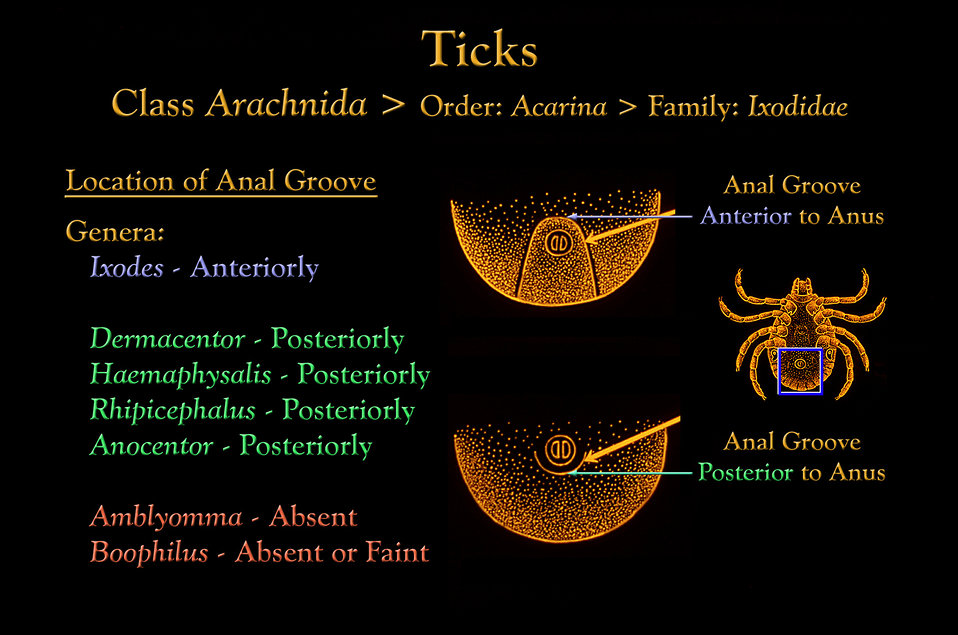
This drawing depicts the locations of an Ixodidae family tick's anal groove, and if one is indeed present, or absent.